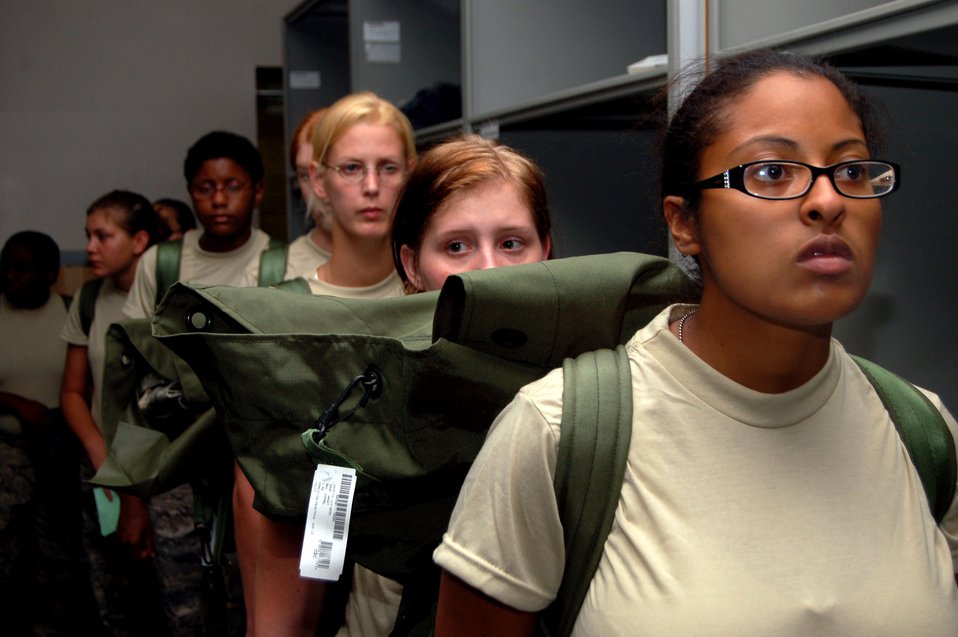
Basic trainees begin to receive ABUs

Basic trainees wait in line for uniform items at the basic trainee equipment issue building Oct. 3 at Lackland Air Force Base,Texas. The new crop of recruits was the first wave of trainees to be issued Airman battle uniforms.